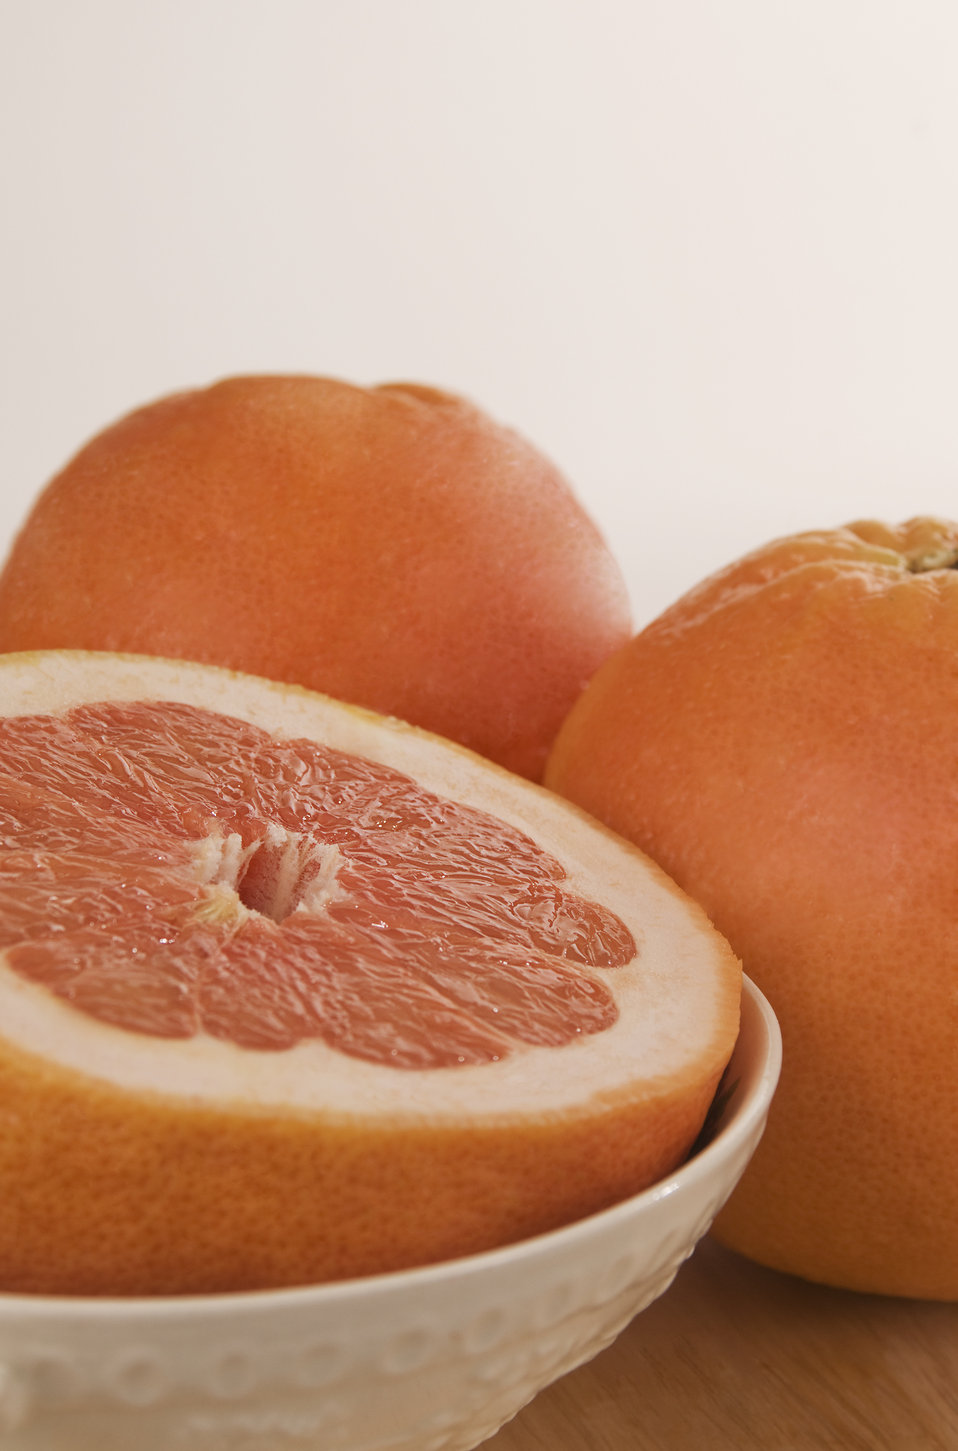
This image depicts a clean wooden tabletop, atop which two whole grapefruit, and a white ceramic bowl containing a half of one of these fruits had been placed. The halved fruit revealed its juicy, nutrient-rich red-orange interior, which was encased in a thick yellow-orange skin. Grapefruit is a terrific source of vitamin A and vitamin C, providing 20% and 70% of the recommended daily allowance (RDA), respectively.